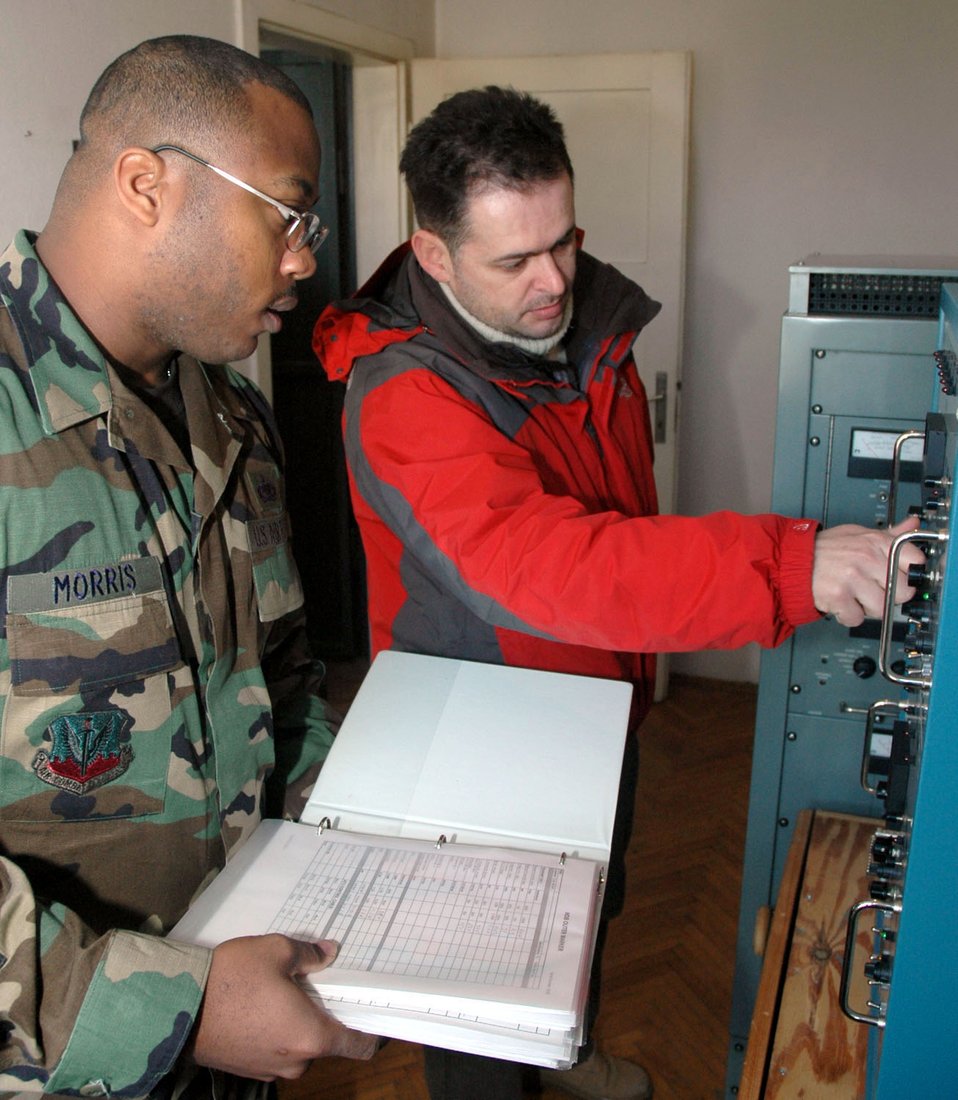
Keeping Tuzla airfield operational

TUZLA AIR BASE, Bosnia and Herzegovina (AFPN) -- Staff Sgt. Mario Morris and Almir Pepeljak perform a preventive maintenance inspection of a non-directional beacon. Sergeant Morris is with the 401st Air Expeditionary Wing and Mr. Pepeljak is a contractor with Kellogg, Brown and Root.